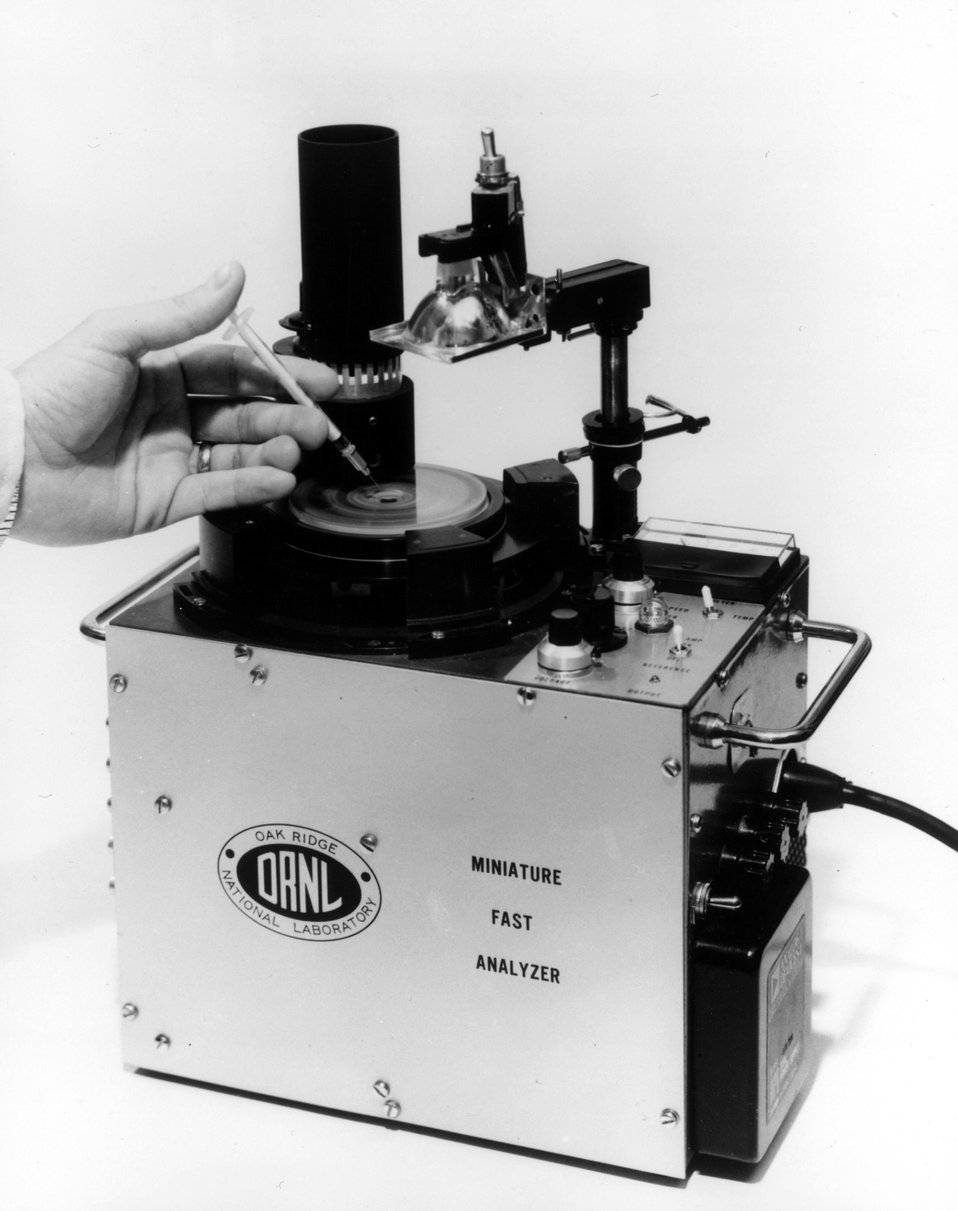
A miniature centrifugal fast analyzer system under development at AEC's Oak Ridge National Laboratory for the analysis of many clinically important biochemicals in blood has been developed. c. 1973